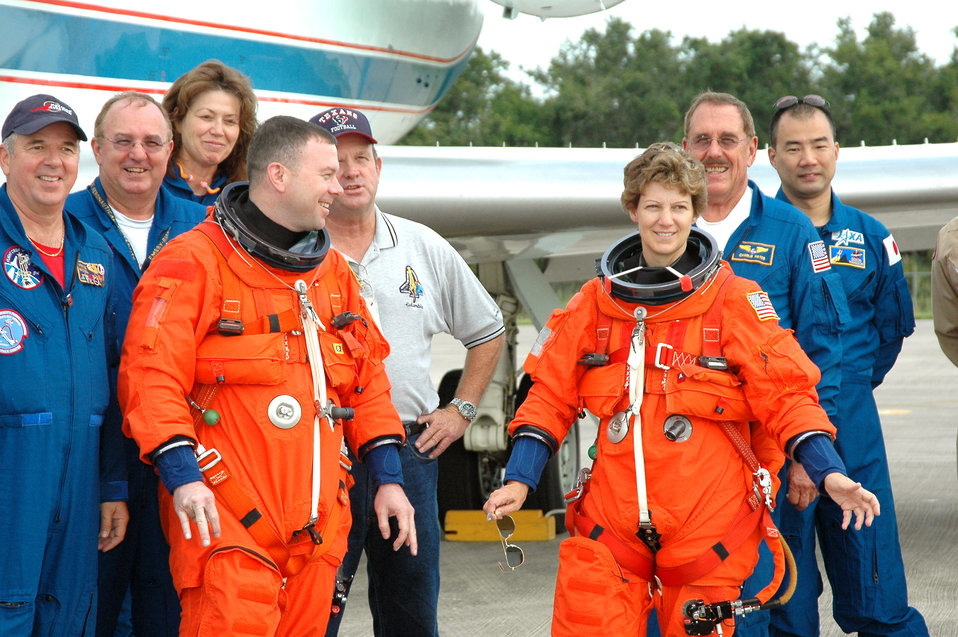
Military astronauts prepare for Discovery mission

CAPE CANEVERAL, Fla. -- Col. James Kelly (left) and retired Col. Eileen Collins are two of three military astronauts on the Discovery crew. Discovery is scheduled to launch July 13.